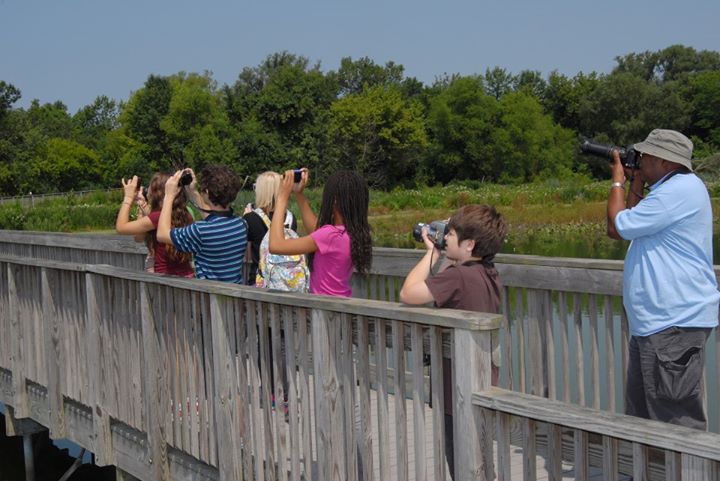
Photo of the Week - Photography at John Heinz National Wildlife Refuge (NJ)

Photo of the Week - 10/4/13

Visitors enjoy photography at John Heinz National Wildlife Refuge in Philadelphia. This week, U.S. Secretary of the Interior Sally Jewell released the Banking on Nature report, which shows America’s national wildlife refuges continue to be strong economic engines for local communities across the country, pumping $2.4 billion into the economy and supporting more than 35,000 jobs.